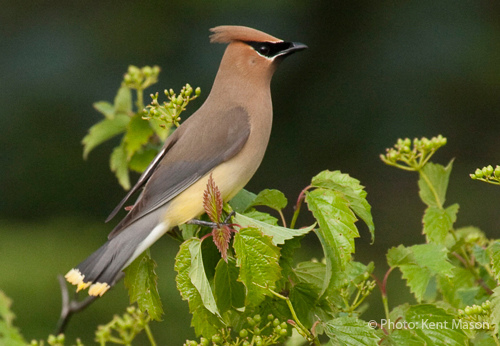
Cedar Waxwing

A Cedar waxwing in wild raisin bush along Cabin Mountain Trail.